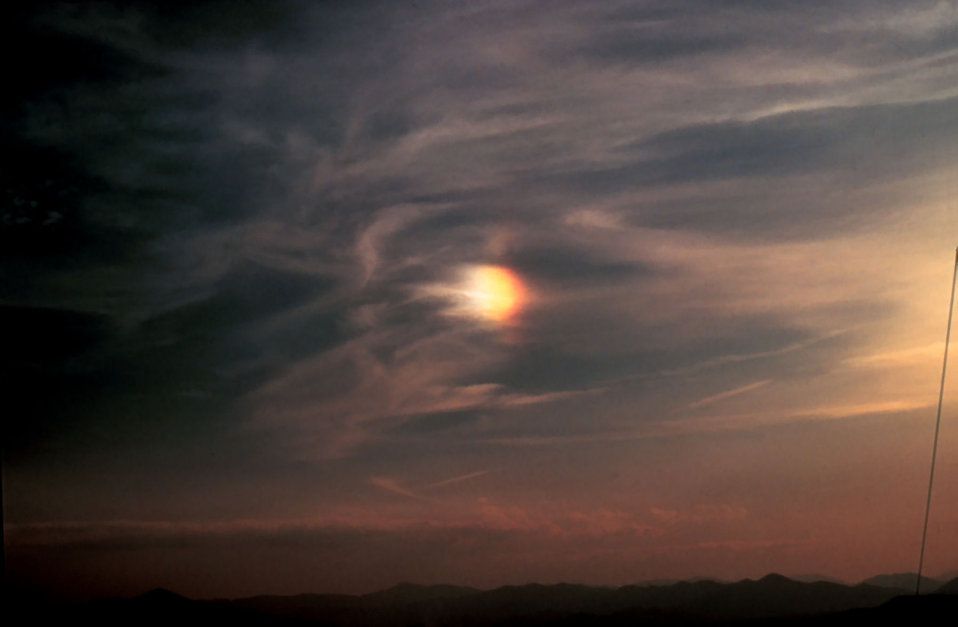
Parhelion or 'sun dog' to the left of the sun